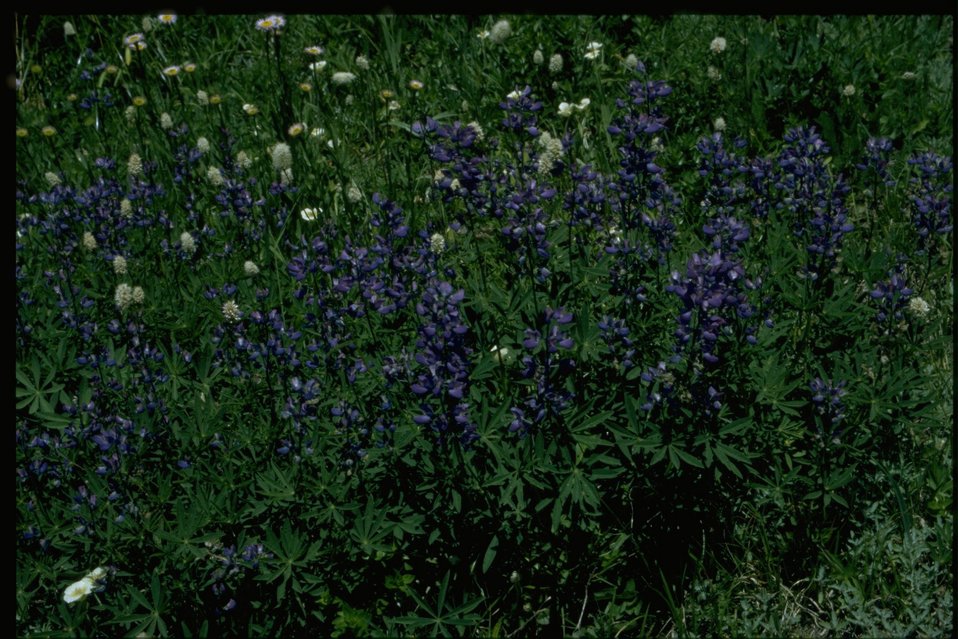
Farshot of Lupinus arcticus.